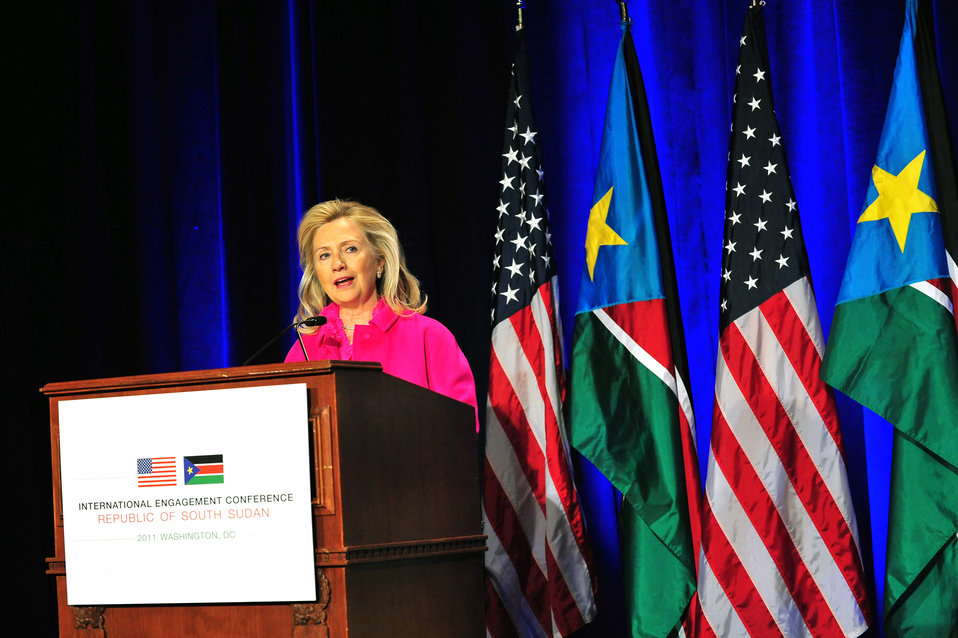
Secretary Clinton Delivers Remarks at International Engagement Conference for South Sudan

U.S. Secretary of State Hillary Rodham Clinton delivers remarks at the International Engagement Conference for South Sudan in Washington, D.C., on December 14, 2011.